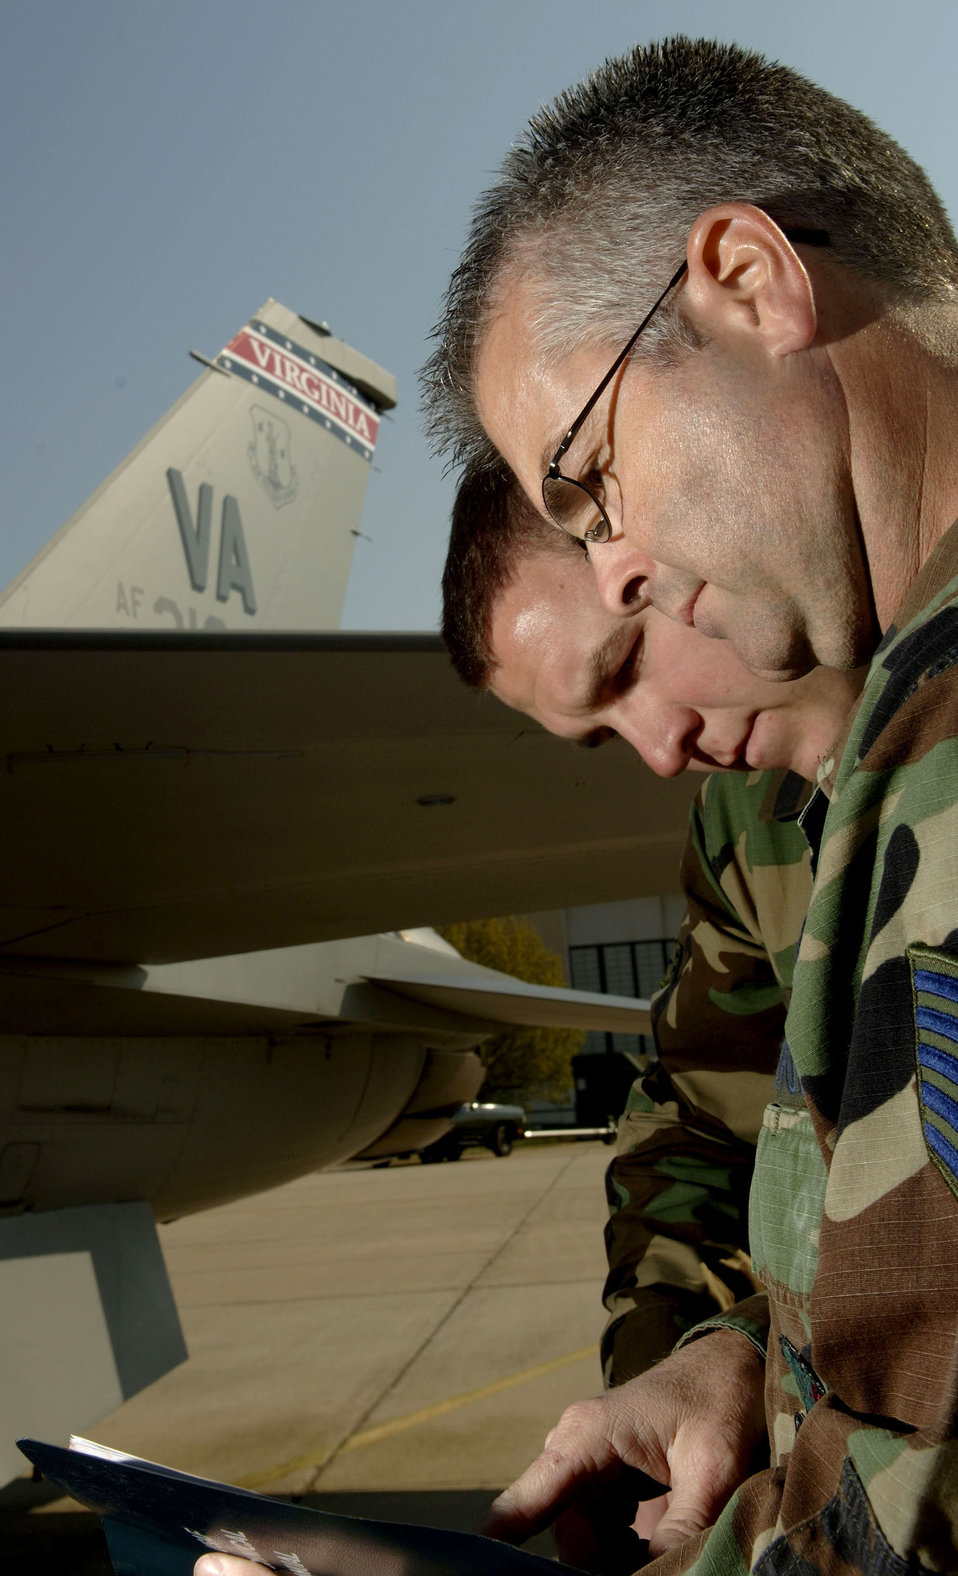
Fighter aircraft transition

Tech. Sgt. Ricky Barber runs through a checklist during a center-line tank install on an F-16 Fighting Falcon at the Virginia Air National Guard located at Sandstone, Va., on Thursday, March 30, 2006. Sergeant Barber has served as a crew chief on Tail No. 86219 since 1992. The Virginia ANG is currently transitioning to the new F-22A Raptor at Langley Air Force Base and will replace the F-16s as early as October 2007. Sergeant barber is with the 192nd Aircraft Maintenance Squadron.